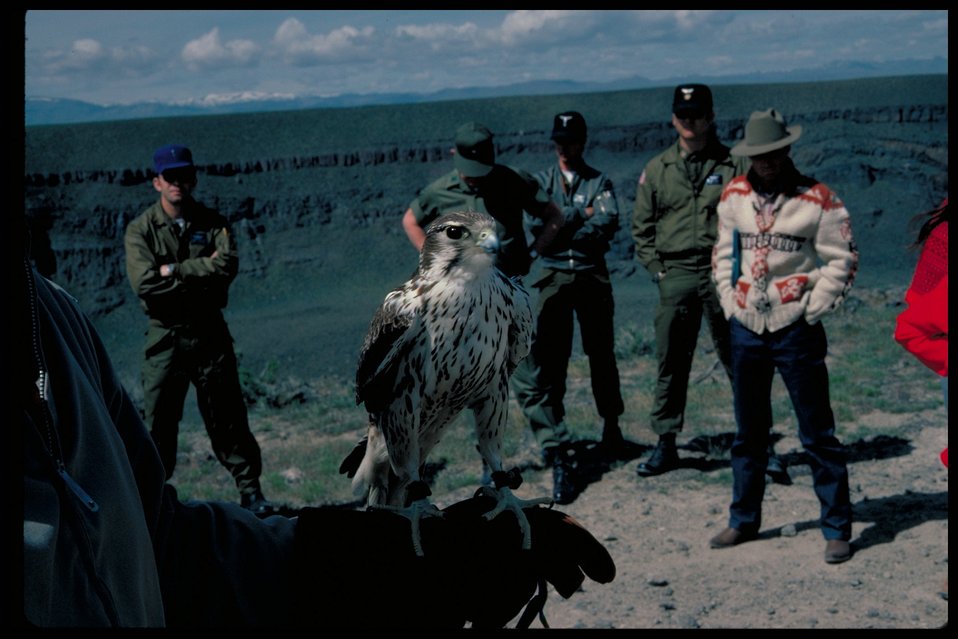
Prarie Falcon Birds of Prey National Conservation Area BOP Owyhee Field Office LSRD Lower Snake River District